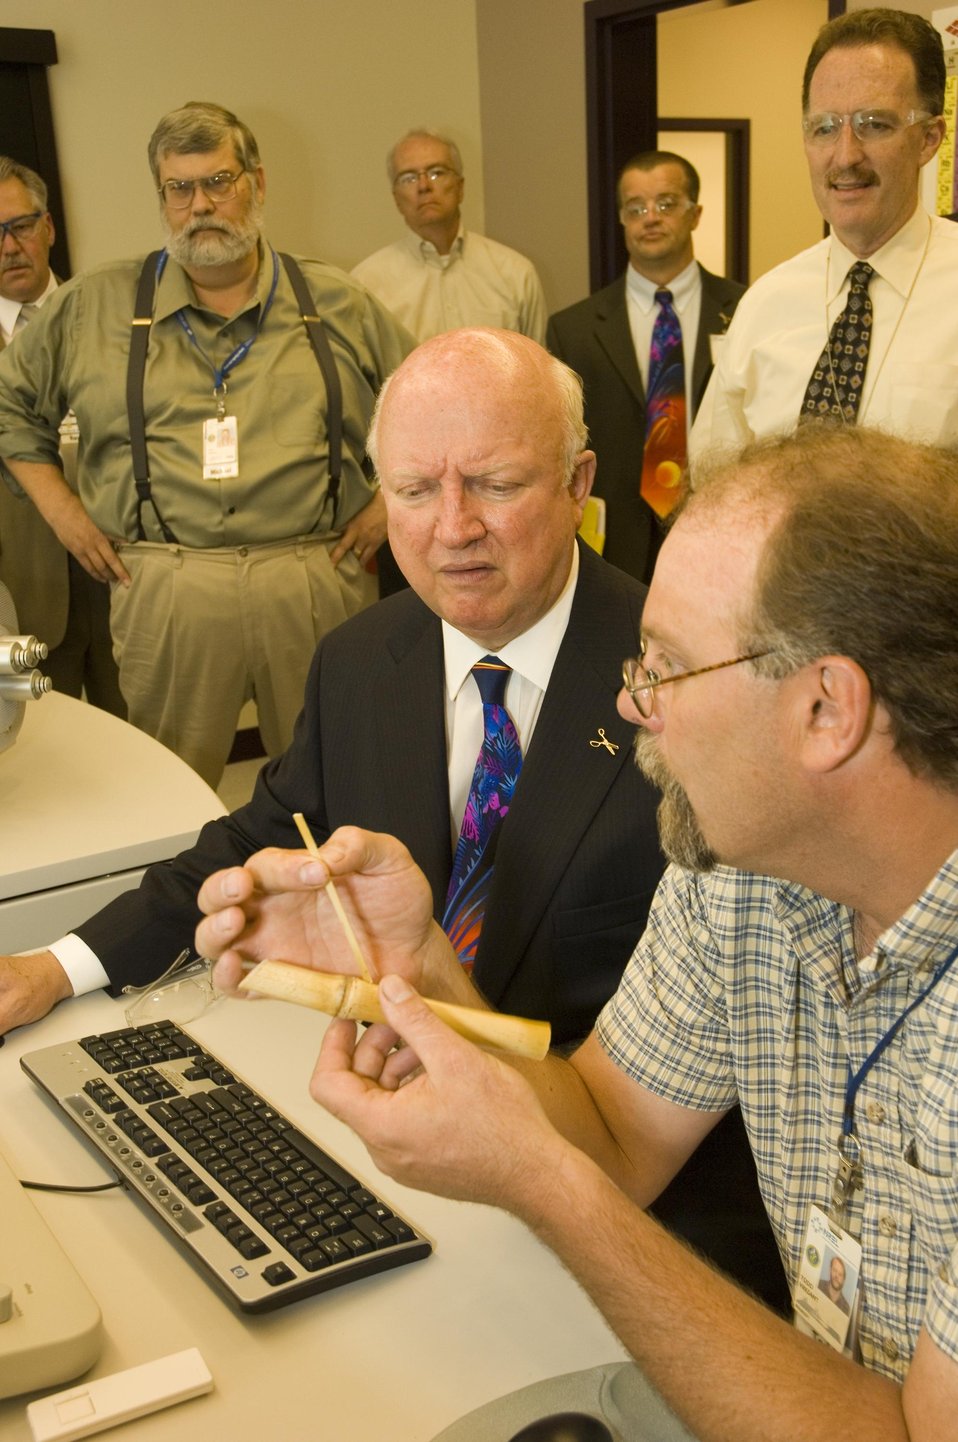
SECRETARY BODMAN TOURS THE NREL'S FIELD TEST LABORATORY BUILDING (FTLB), RESEARCHER TODD VINZANT DEMONSTRATES THE COMPUTER HARDWARE AND SOFTWARE SYSTEMS USED IN THE BIOMASS SURFACE CHARACTERIZATION LABORATORY AT NREL.

THE BSCL IN THE FIELD TEST LABORATORY BUILDING WILL SUPPORT NEW TECHNOLOGIES FOR BIOREFINERIES WHICH WILL PRODUCE TRANSPORTATION FUELS AND A RANGE OF OTHER PRODUCTS, MUCH AS A CONVENTIONAL OIL REFINERY DOES TODAY. BIO-REFINERIES ARE TO USE RENEWABLE PLANT AND WASTE MATERIALS INSTEAD OF PETROLEUM.